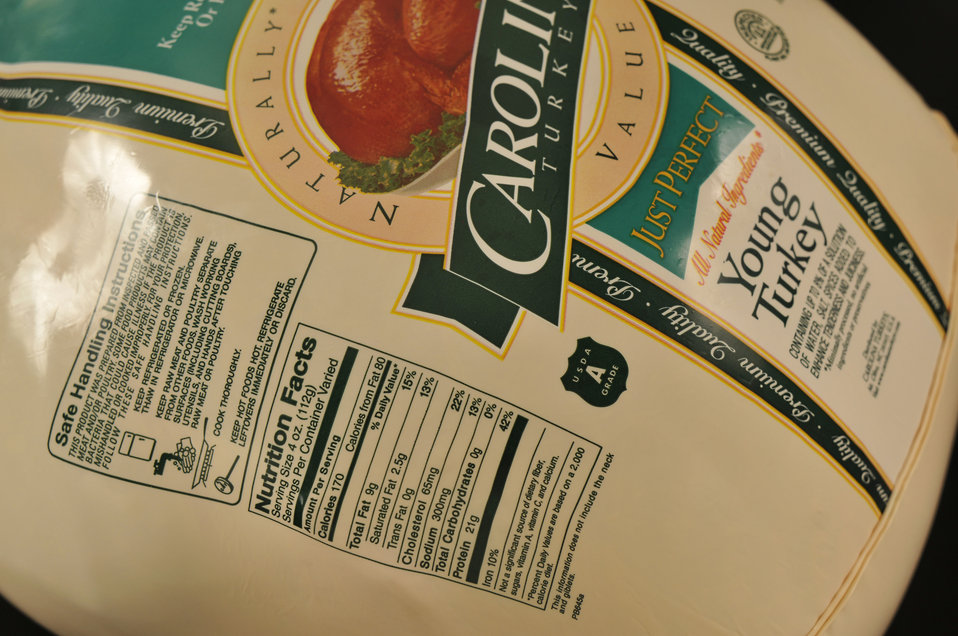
U.S. Department of Agriculture (USDA) Agricultural Marketing Service (AMS) Poultry Programs grades wrapped turkeys at the Butterball, LLC Company in Huntsville, Arkansas on March 23, 2010. Chickens, turkeys, ducks, geese, guineas, and pigeons are all eligible for grading and certification services provided by the USDA AMS Poultry Programs’ Grading Branch. These services are provided in accordance with Federal poultry grading regulations.